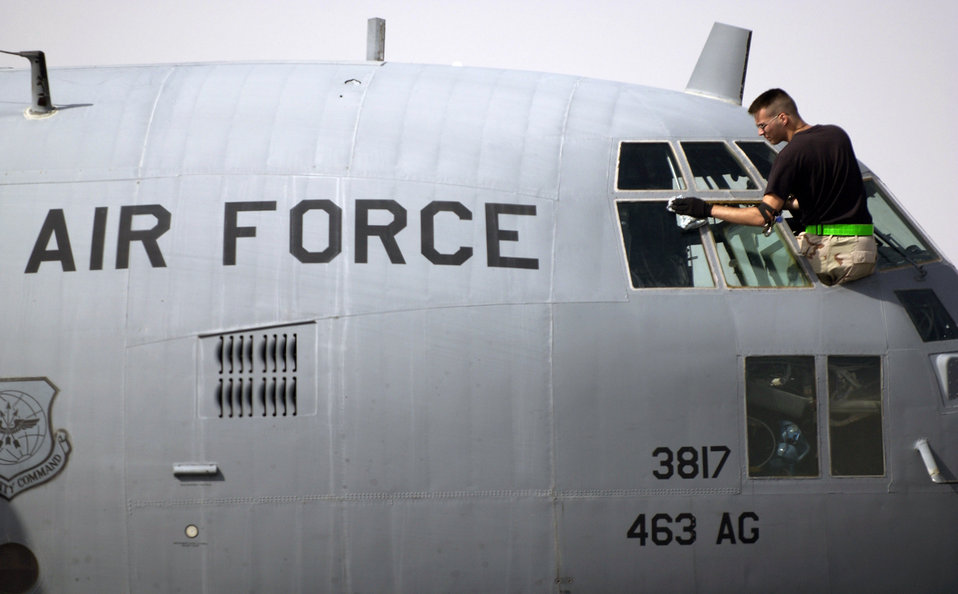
Windshield wiper

SOUTHWEST ASIA -- A crew chief with the 379th Air Expeditionary Wing cleans the windows of a C-130 Hercules at a forward-deployed location. C-130s support operations Iraqi Freedom and Enduring Freedom.